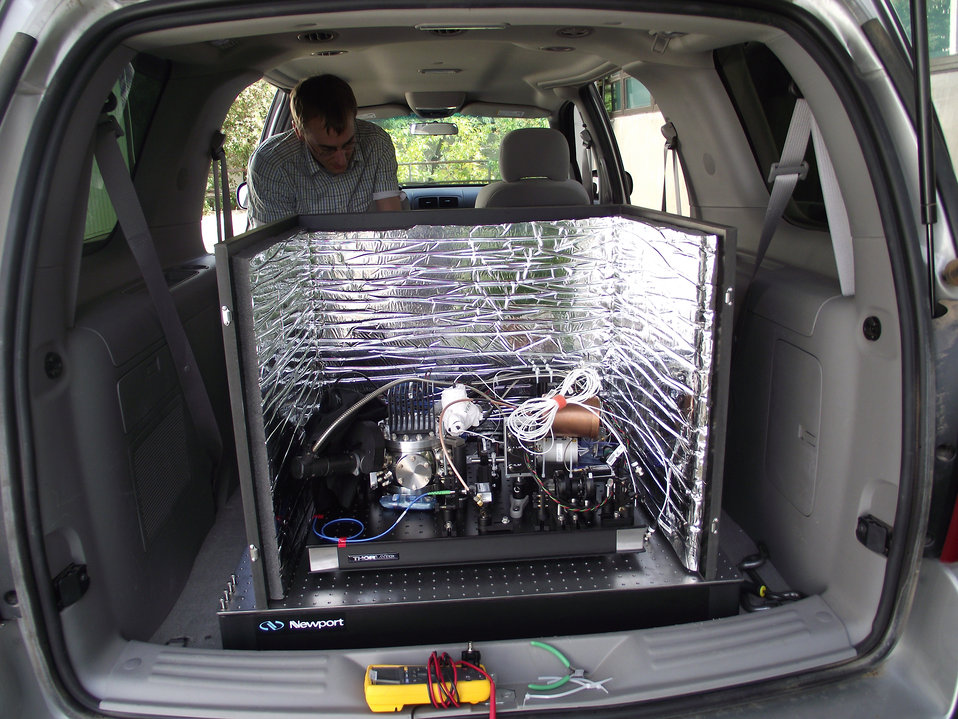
Laser; David Leibrandt

NIST researcher David Leibrandt tests the stability of an advanced laser in a minivan. The laser and related instruments are inside the box, which is 2 by 2 by 2.5 feet in size. The stainless steel cylinder at the lower left contains the optical cavity used to stabilize the laser, which is hidden behind the cylinder.